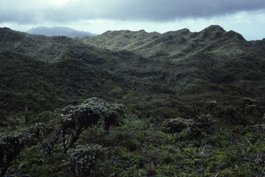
O'ahu Forest - O'ahu Forest NWR

The O'ahu Forest is one of the last remaining native intact forests on the Island of O‘ahu.